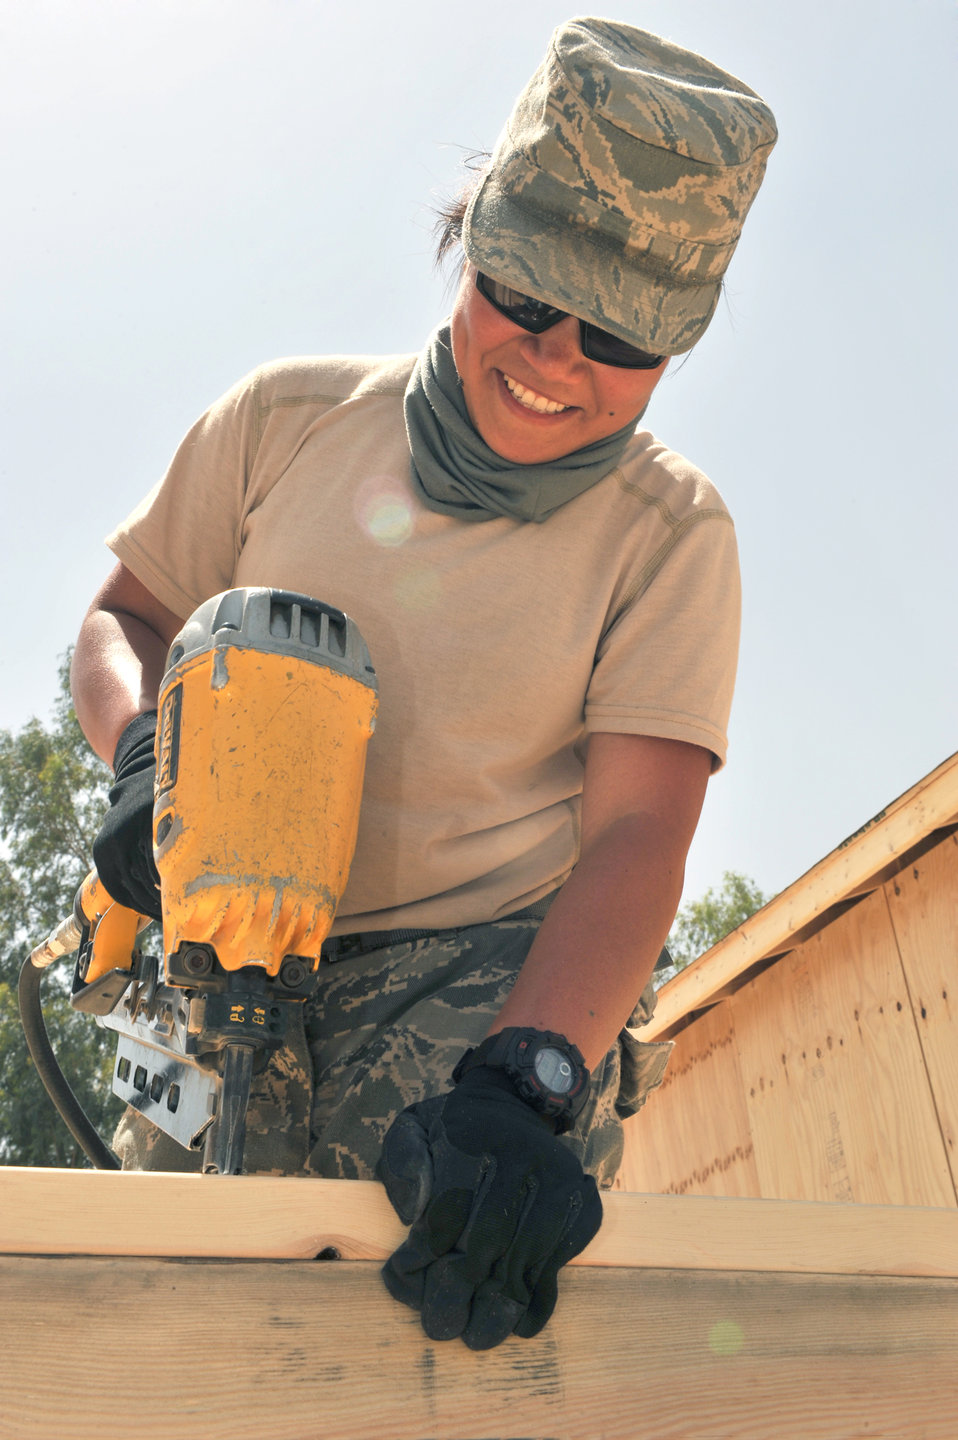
Prime BEEF

Senior Airman Ingrid Tamayo assembles rough framing of an exterior wall May 23, 2011, at a combat outpost in Afghanistan. Airman Tamayo is a structural journeyman assigned to the 577th Expeditionary Prime Base Engineer Emergency Force Squadron.